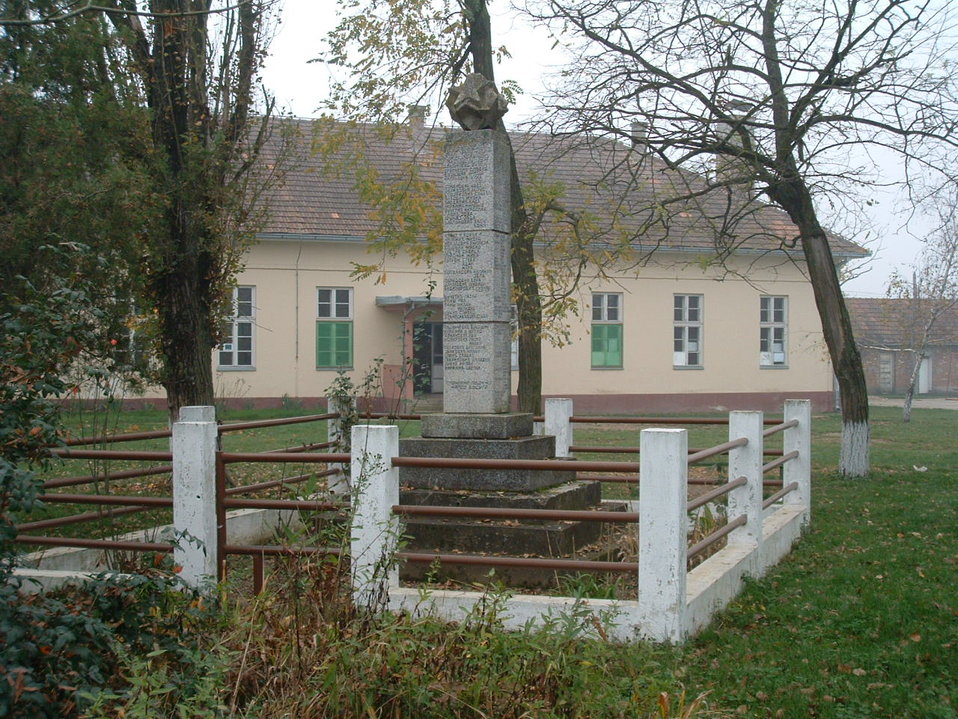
Српски / srpski: Босут - Споменик испед сеоске школе Bosut - The Monument in Front of Village School